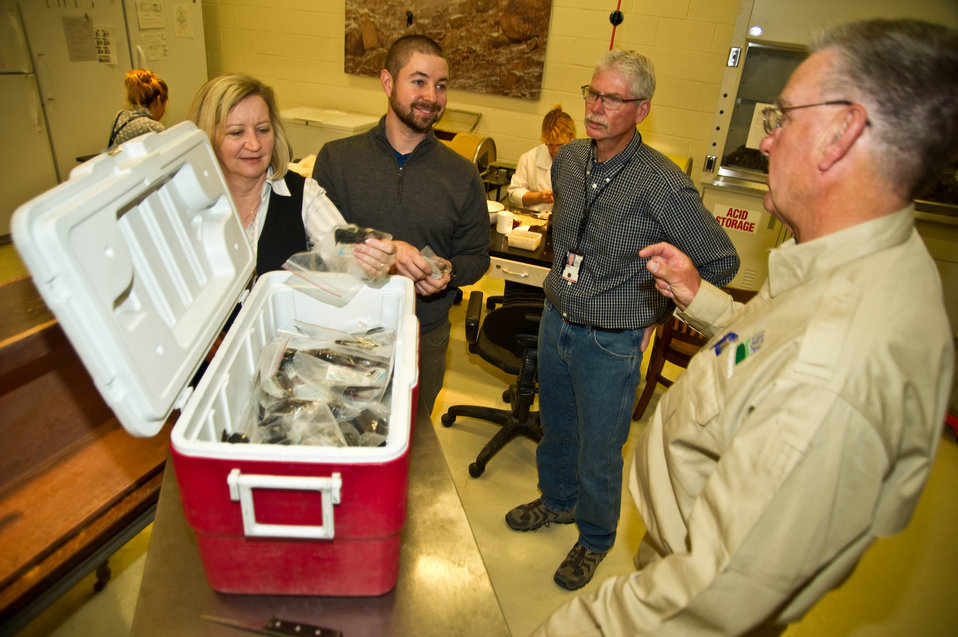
Smithsonian Institution National Museum of Natural History Research Scientist and Manger in the Feather Identification Lab Dr. Carla Dove and Smithsonian Institution National Museum of Natural History Feather Identification Lab Research Scientist Jim Whatton along with U.S. Department of Agriculture (USDA) Animal and Plant Health Inspection Service (APHIS) Wildlife Biologists George Graves and Keel Price open the last cooler that was sent over before they left Afghanistan on Tuesday, Mar. 19, 2013.